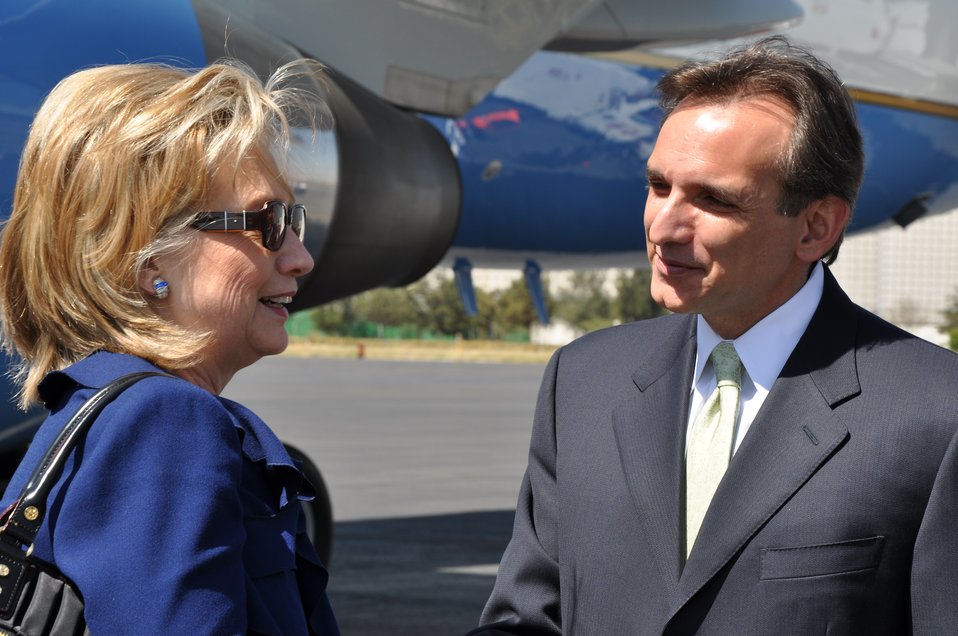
Secretary Clinton With U.S. Ambassador to Mexico Carlos Pascual

U.S. Secretary of State Hillary Rodham Clinton is greeted by U.S. Ambassador to Mexico Carlos Pascual in Presidential Hangar, Mexico City, March 25, 2010.